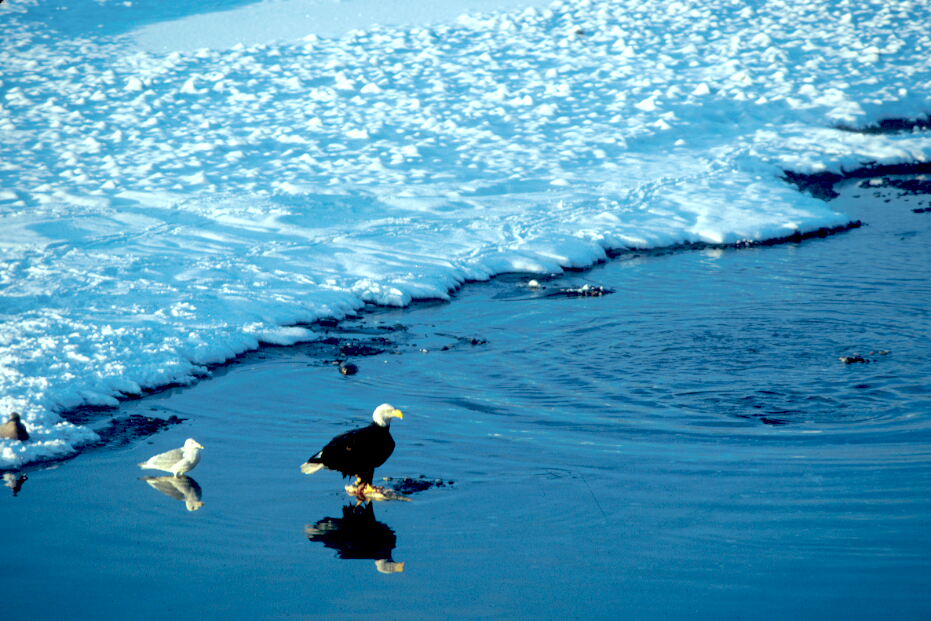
Bald Eagle.